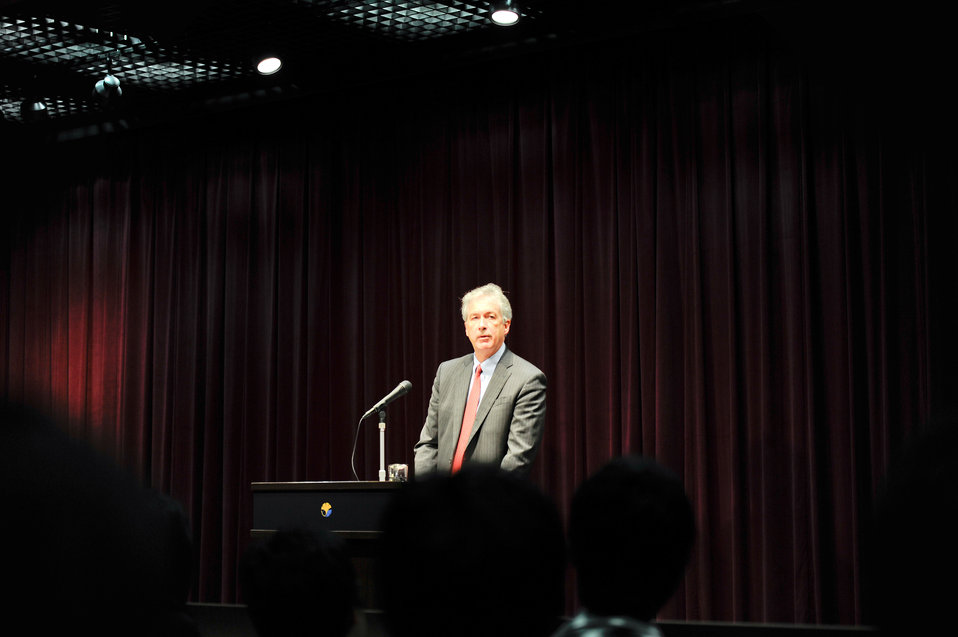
Deputy Secretary Burns Discusses Increasing U.S. Engagement in the Asia Pacific Region

U.S. Deputy Secretary of State William Burns discusses increasing U.S. engagement in the Asia Pacific region, including establishing a positive relationship with China, working towards North Korea's denuclearization, and building a new regional architecture, at the University of Tokyo in Japan on October 27, 2011.